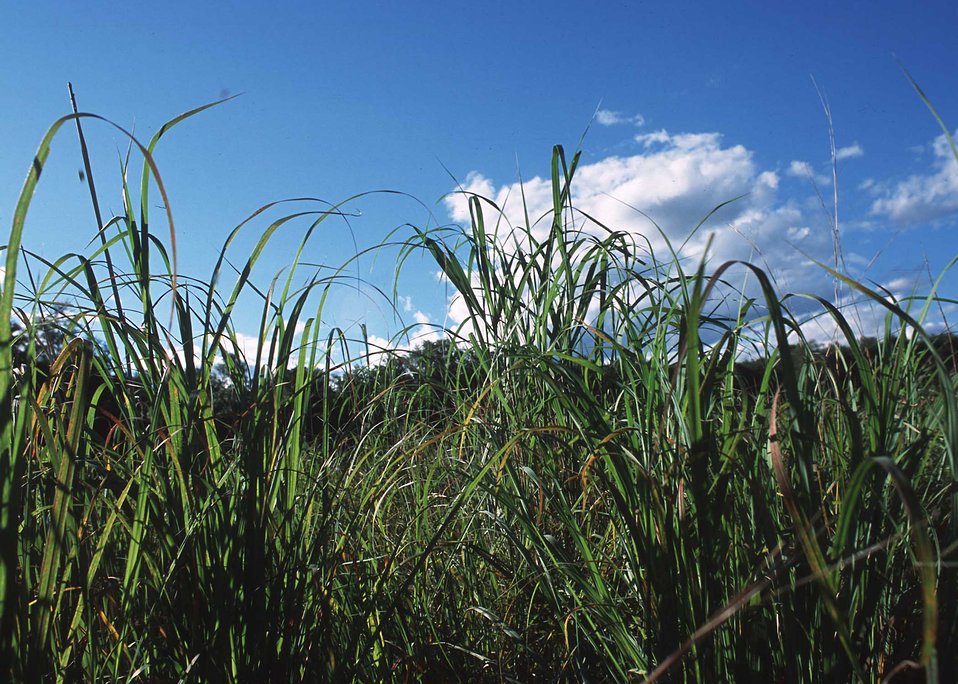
Vibrant growth in a grassland habitat in Litchfield County.